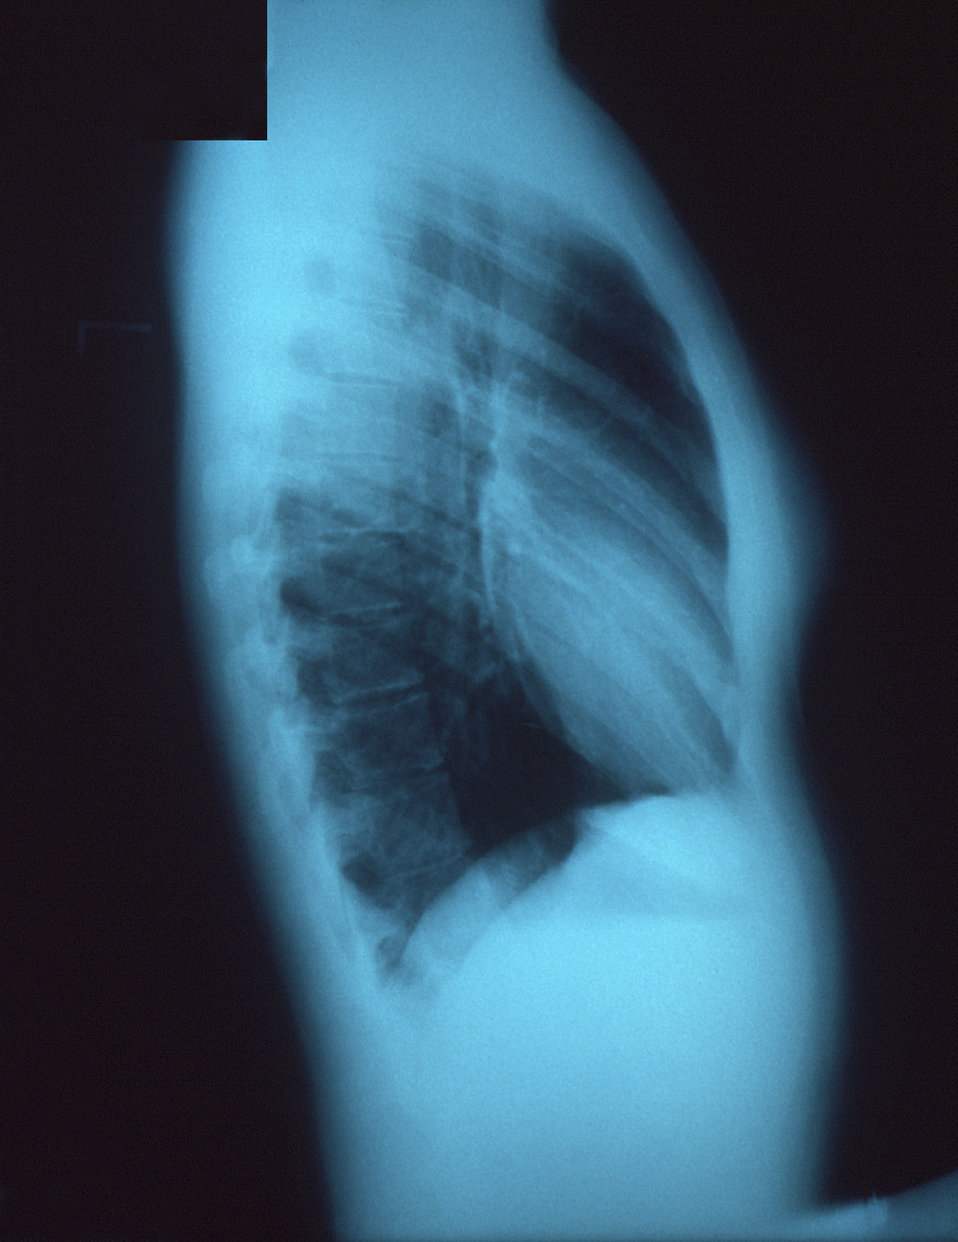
This is a right lateral view chest x-ray depicting normal, healthy thoracic and pulmonary conditions.